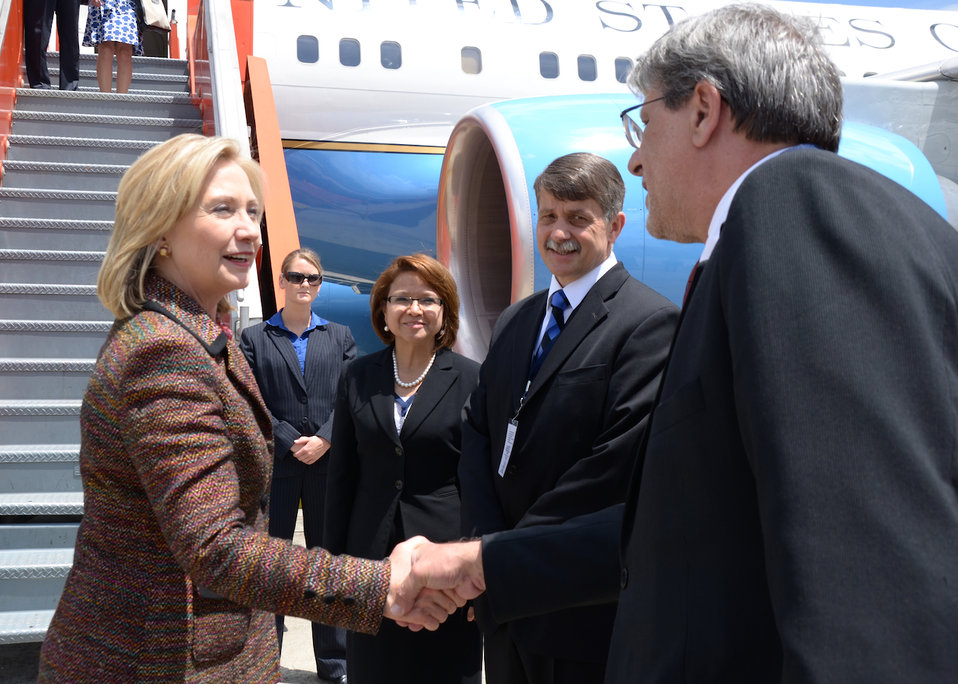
Secretary Clinton Is Greeted By IDB Representative Taccone and Ambassador McFarland

U.S. Secretary of State Hillary Rodham Clinton is greeted by Juan Jose Taccone, Representative of the Inter-American Development Bank (IDB) in Guatemala, and U.S. Ambassador to Guatemala Stephen G. McFarland, center right, upon her arrival to Guatemala City, Guatemala, on June 22, 2011.